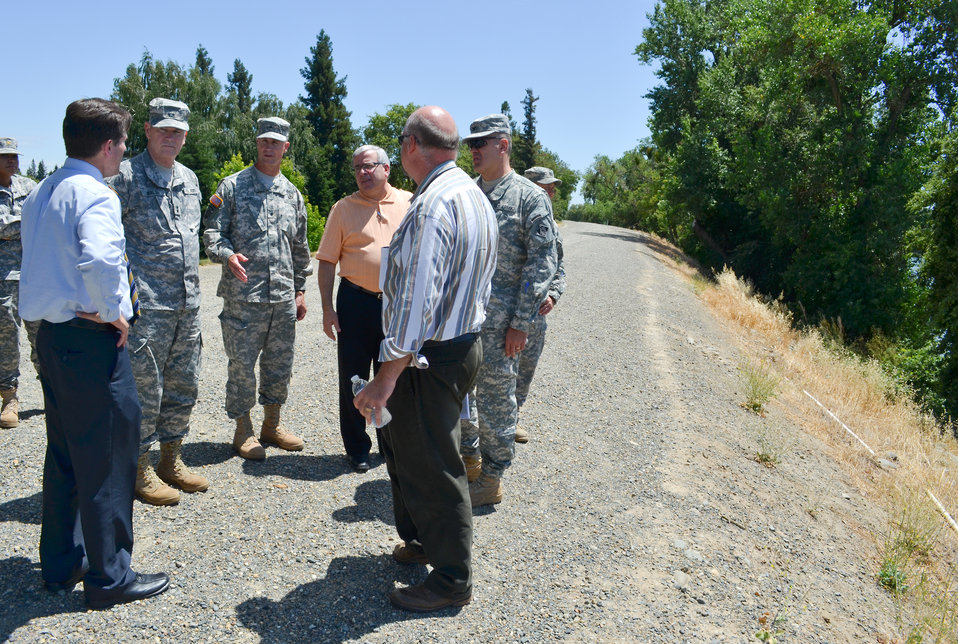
Maj. Gen. Walsh tours Sacramento River levee

U.S. Army Corps of Engineers civil engineer Creg Hucks, (far left) explains problems with Sacramento River levees to Maj. Gen. Michael J. Walsh (second from left), the Corps’ Deputy Commanding General for Civil and Emergency Operations, and Brig. Gen. Michael Wehr (third from left), commander of the Corps’ South Pacific Division, in Sacramento, Calif., July 19, 2012. Walsh oversees all of the Corps’ flood risk reduction projects in California, including Sacramento levee improvements and the construction of Folsom Dam’s new auxiliary spillway.